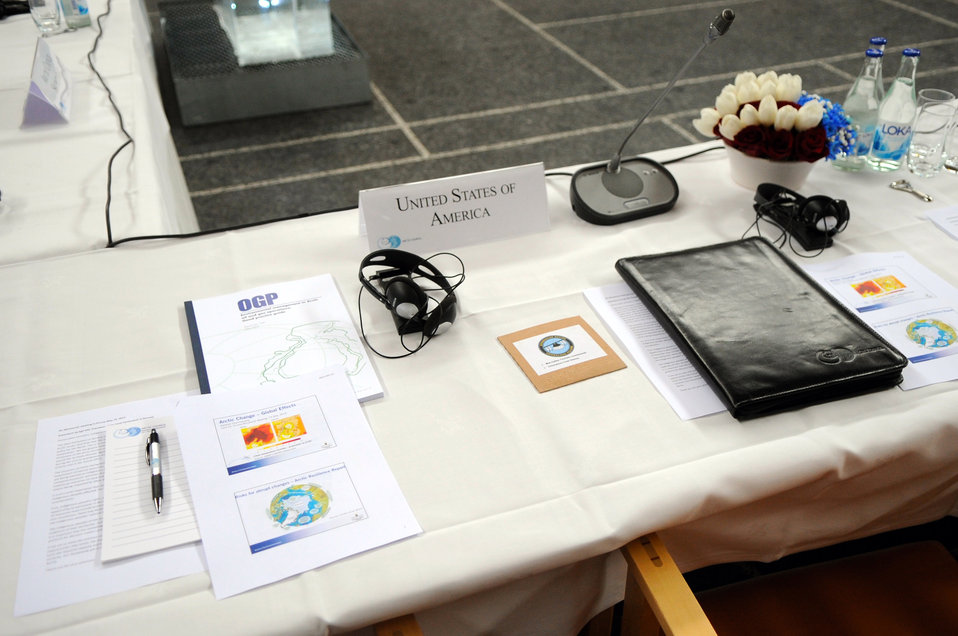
Secretary Kerry Attends Arctic Council Ministerial Session

Behind the scenes view of the place setting for U.S. Secretary of State John Kerry as he attends the Kiruna Ministerial Meeting of the eighth annual Arctic Council meeting at the City Hall in Kiruna, Sweden, on May 15, 2013.